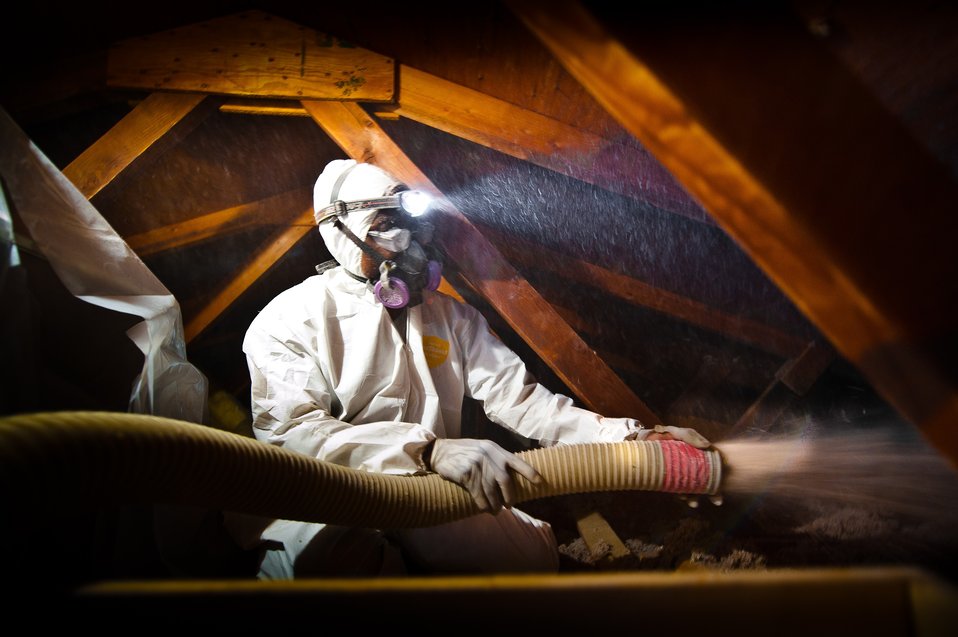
William Stewart with Veterans Green Jobs, blows cellulose insulation in the attic of this Lakewood, Colorado, home bringing the R value up to R38. This home is part of the Energy Department's Weatherization Assistance Program that supports energy efficiency upgrades to low-income homes in Denver.